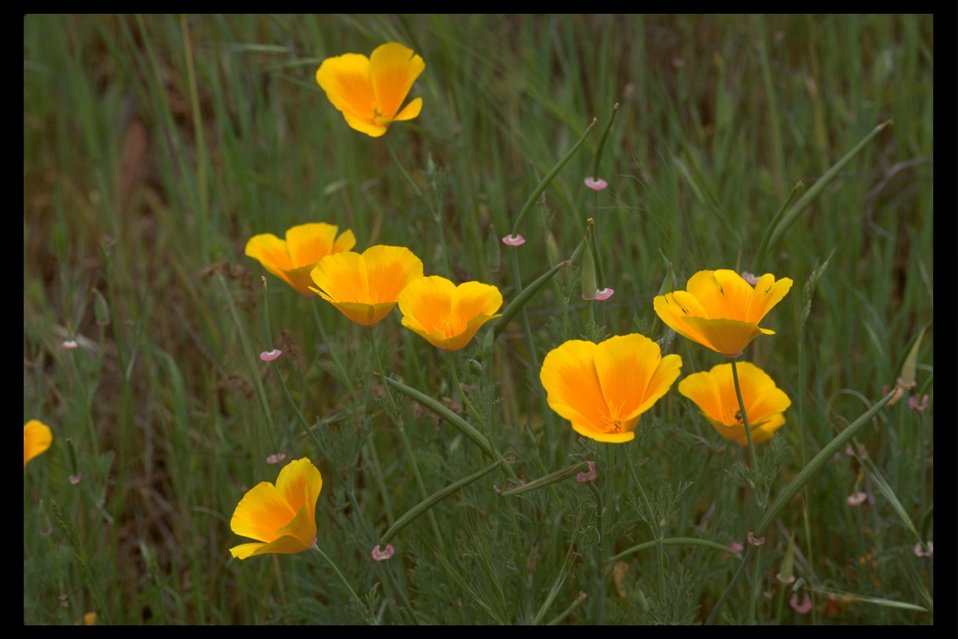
California Poppy (Eschscholzia californica) along Meadows Road in Sam's Valley.